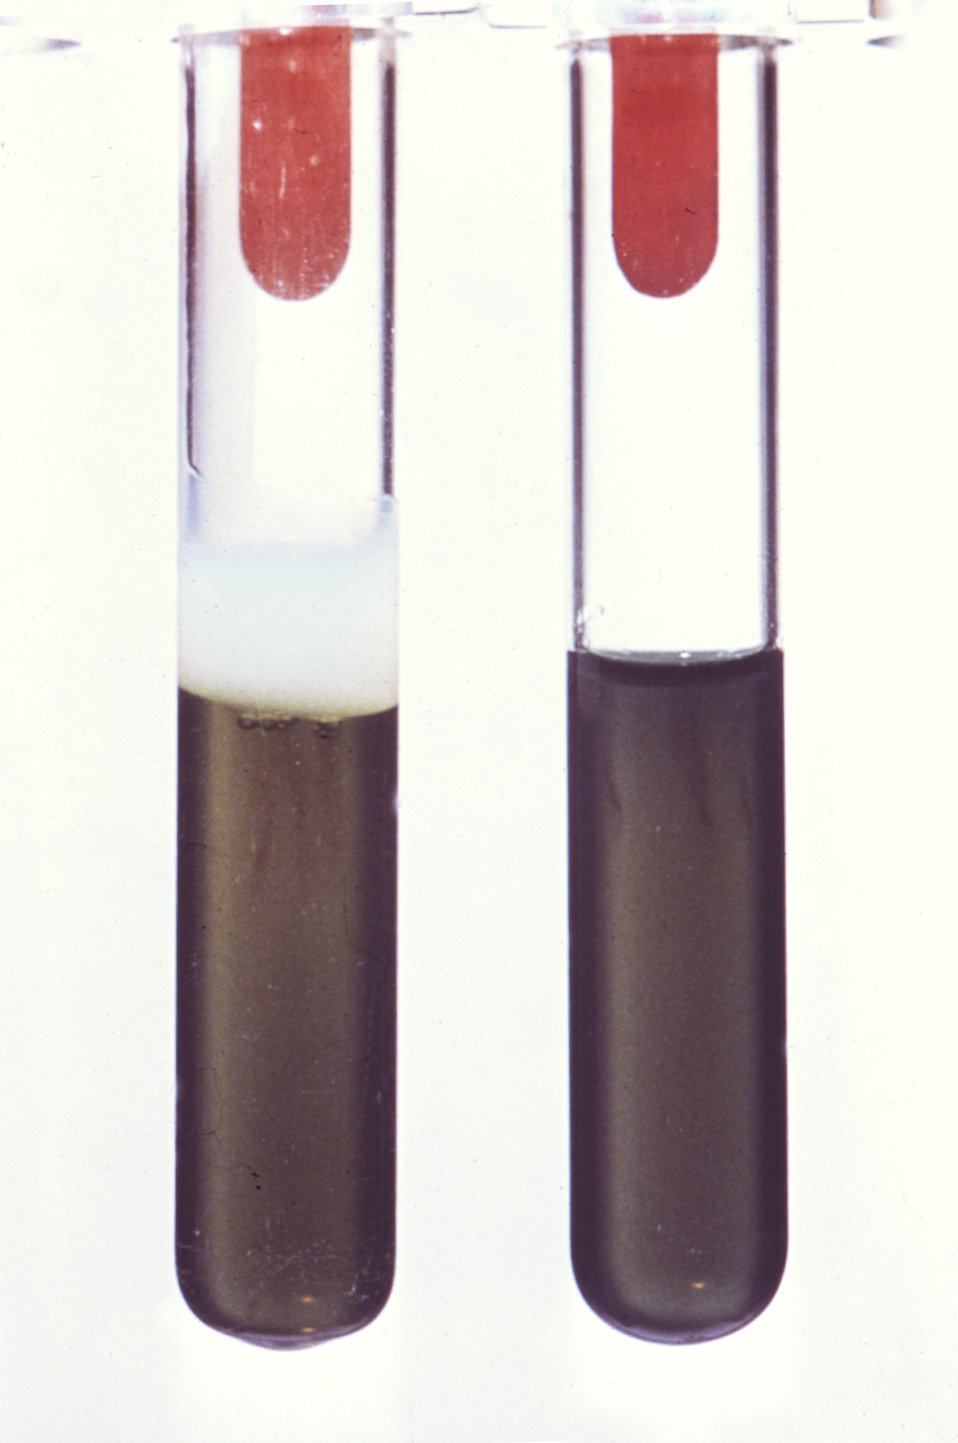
This is the type of OF (oxidative-fermentative) glucose reaction expected from a non-oxidative, non-fermentative organism.